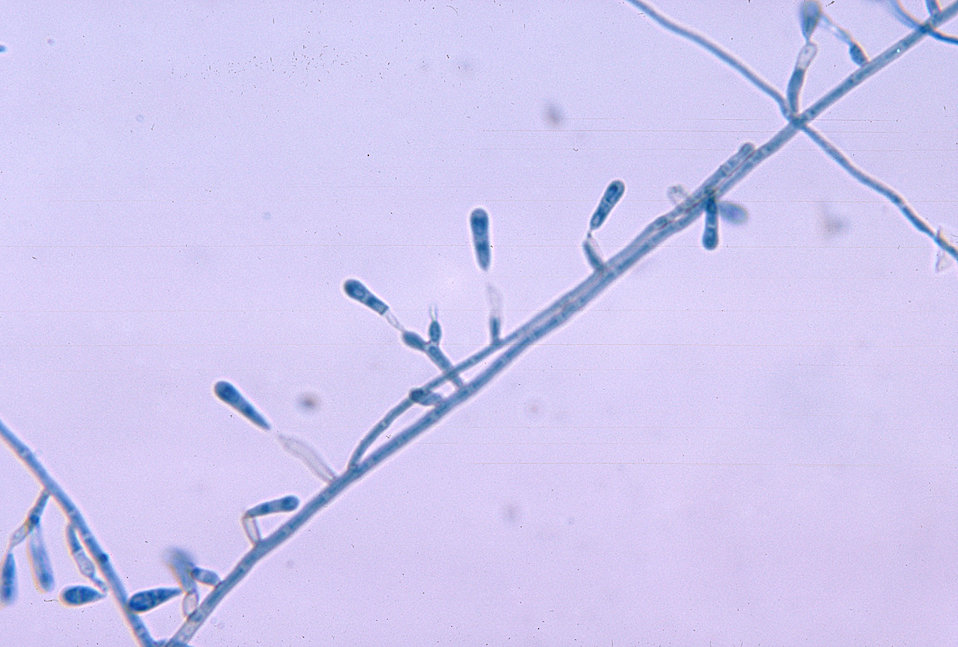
This micrograph shows the fungus Ochroconis gallopavum, formerly Dactylaria gallopava, having been isolated from a 6 day old chicken brain.